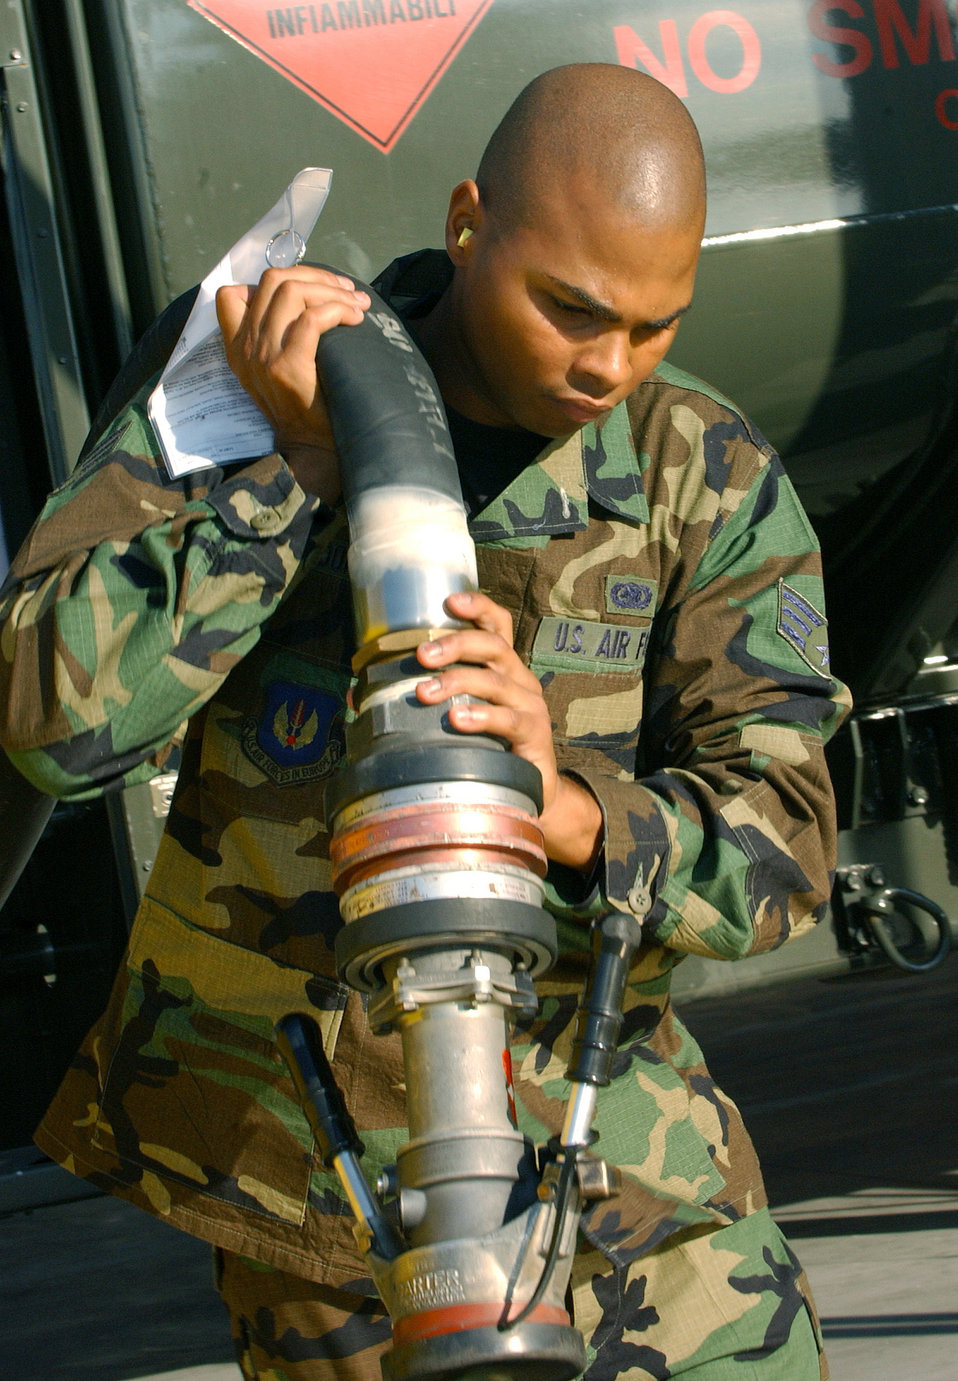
No leaks

AVIANO AIR BASE, Italy -- Senior Airman Kelston McDonald tests the nozzle point of a hose for fuel leakage on an R-11 vehicle here Sept. 20. Airman McDonald is assigned with the 31st Logistics Readiness Squadron.